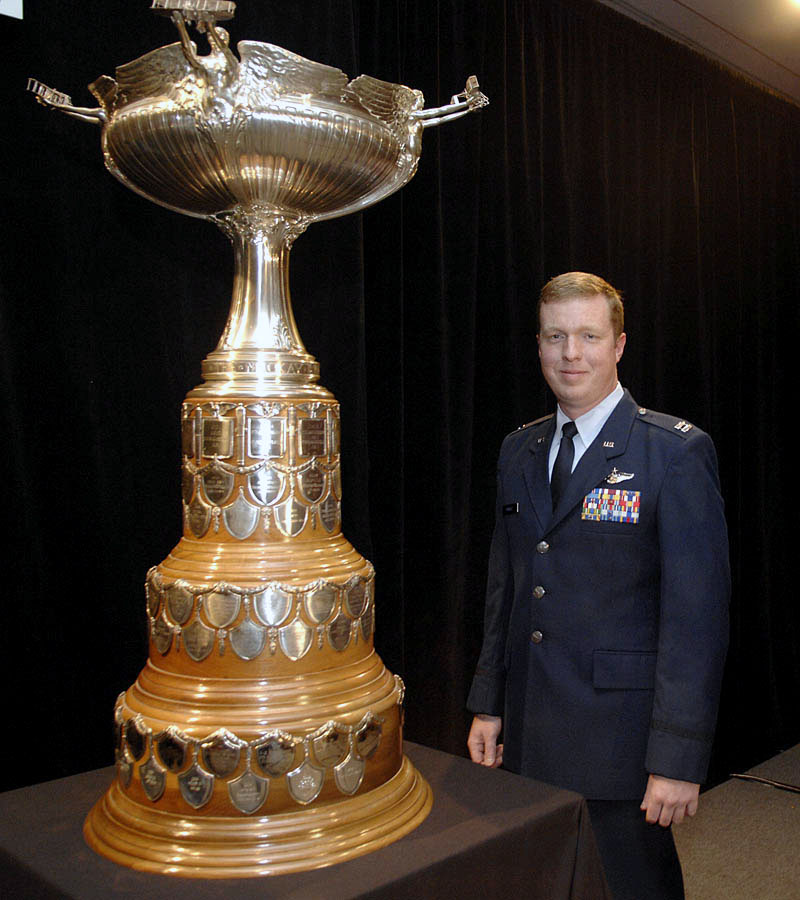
A-10 pilot awarded Mackay Trophy

Capt. Scott L. Markle was presented the Clarence Mackay Trophy during a ceremony Oct. 29 in Arlington, Va. Captain Markle, an A-10 Thunderbolt II pilot with the 81st Fighter Squadron at Spangdahlem Air Base, Germany, received the award for his actions while supporting troops in contact with the enemy along the Afghanistan-Pakistan border. He is credited with destroying three machine gun nests and killing forty Taliban fighters. His actions saved the lives of 15 soldiers who were outnumbered three to one by the enemy.